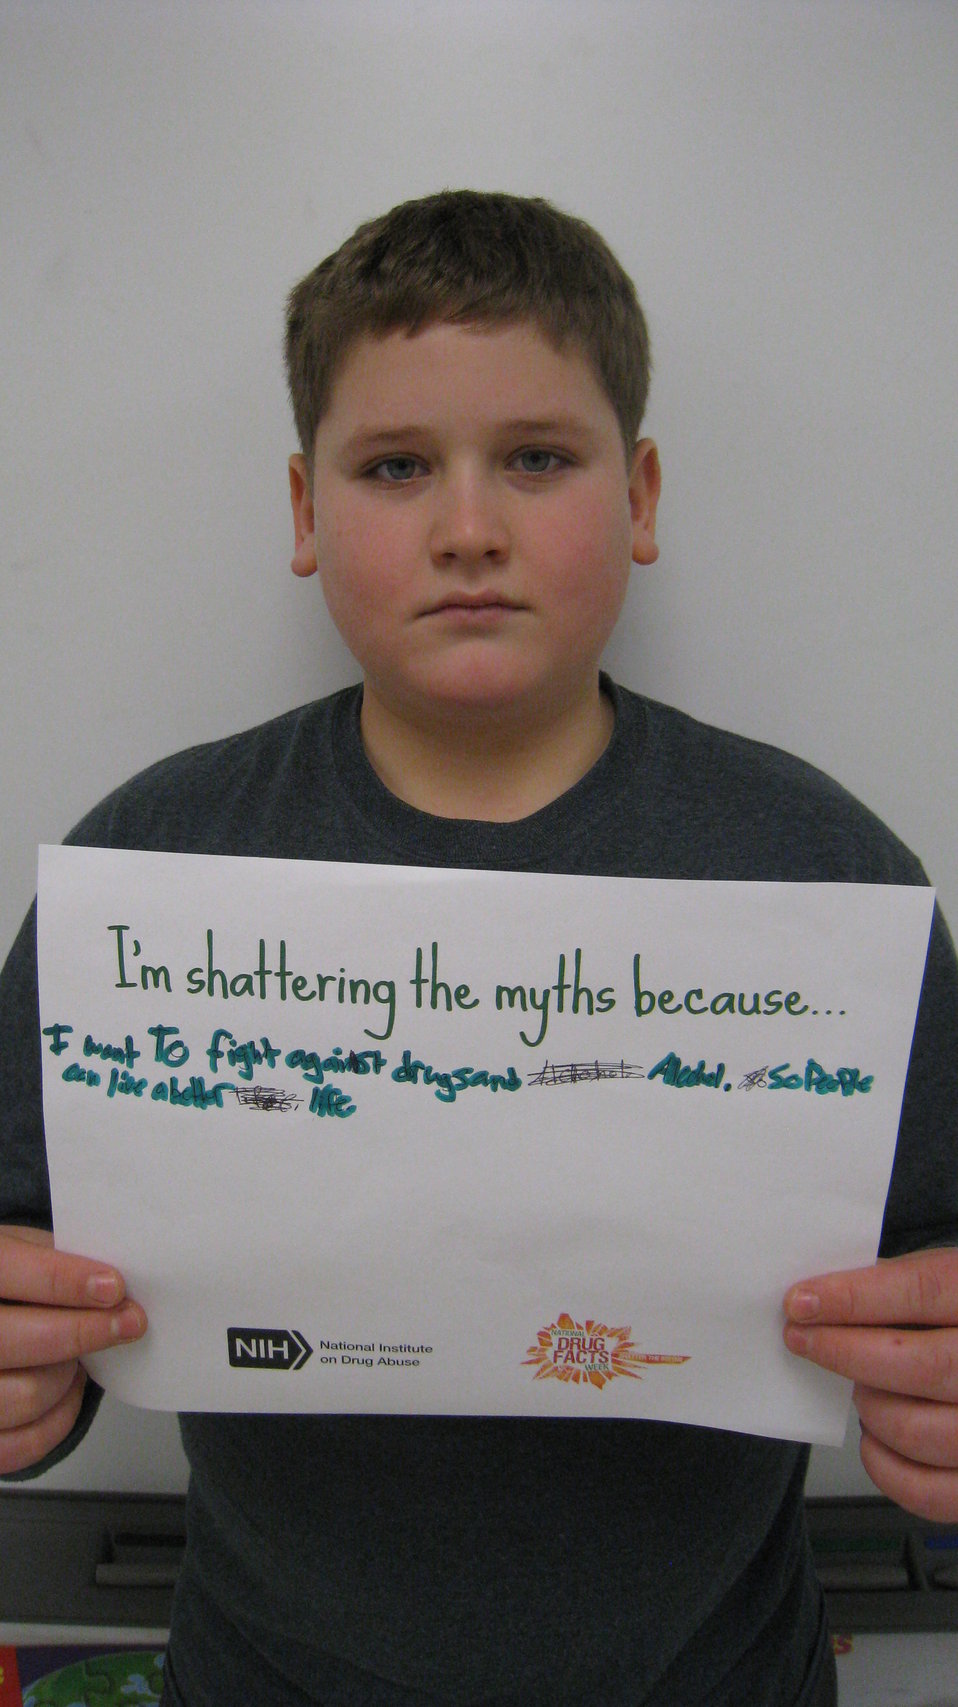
I'm Shattering the Myths Because...

Teenagers from the Van Buren County SAFE Coalition's, Youth Leadership Council (YLC) in Keosauqua, Iowa participate in various events during National Drug Facts Week, 2014.